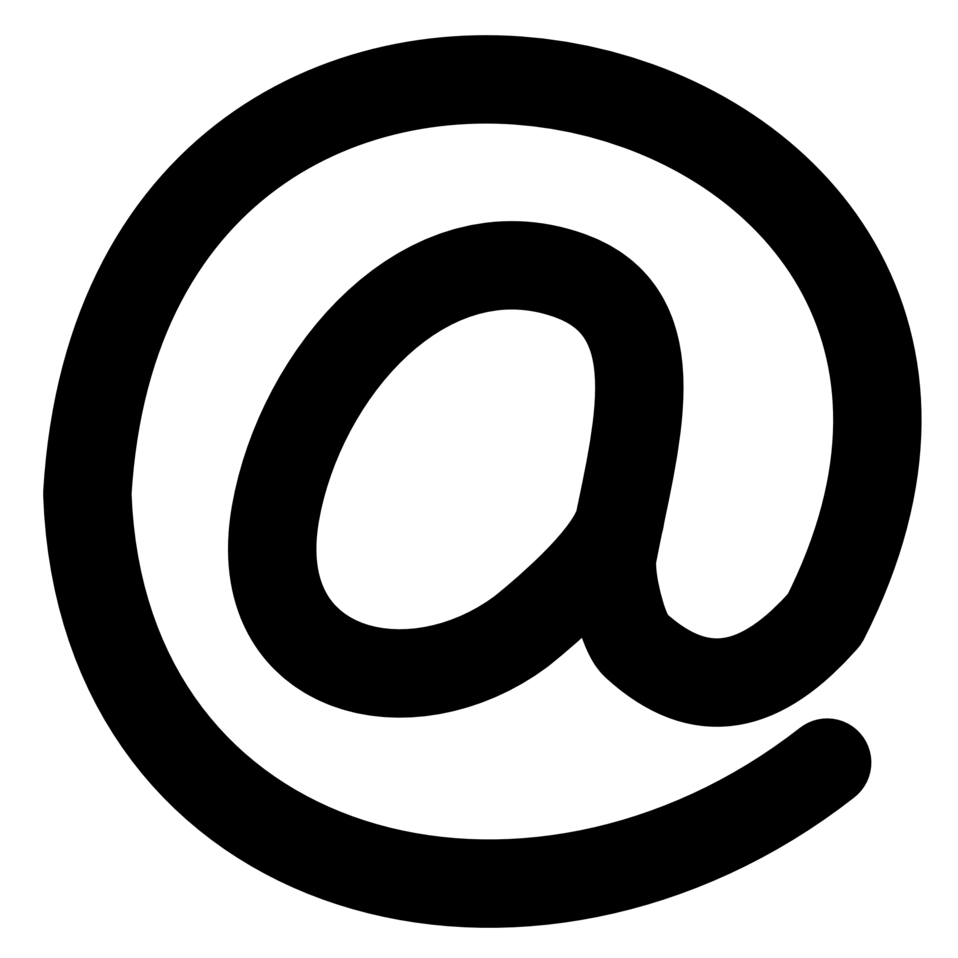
small @ symbol